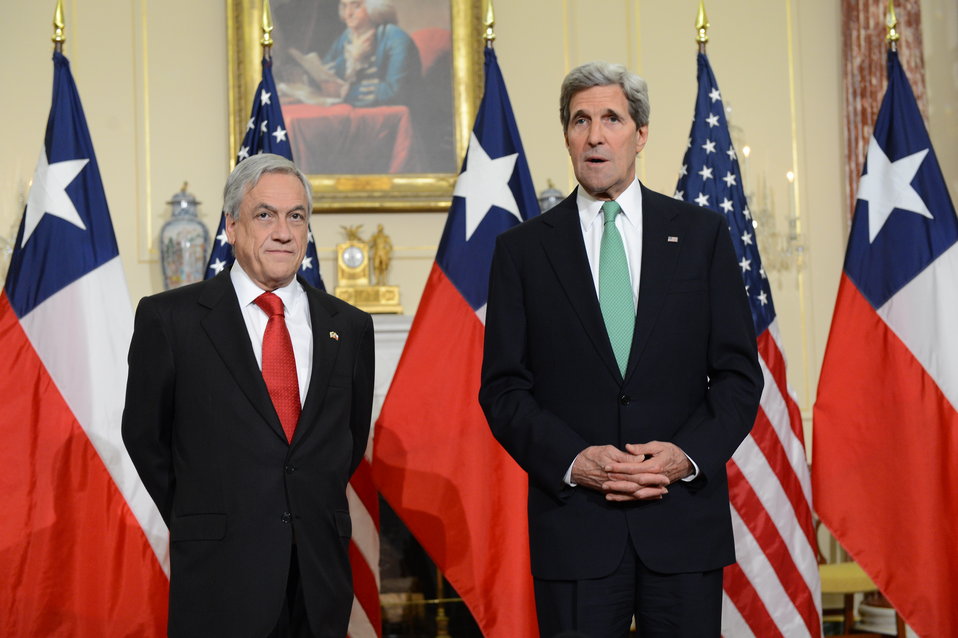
Secretary Kerry Meets With Chilean President Pinera

U.S. Secretary of State John Kerry meets with Chilean President Sebastian Pinera at the U.S. Department of State in Washington, D.C., on June 3, 2013.